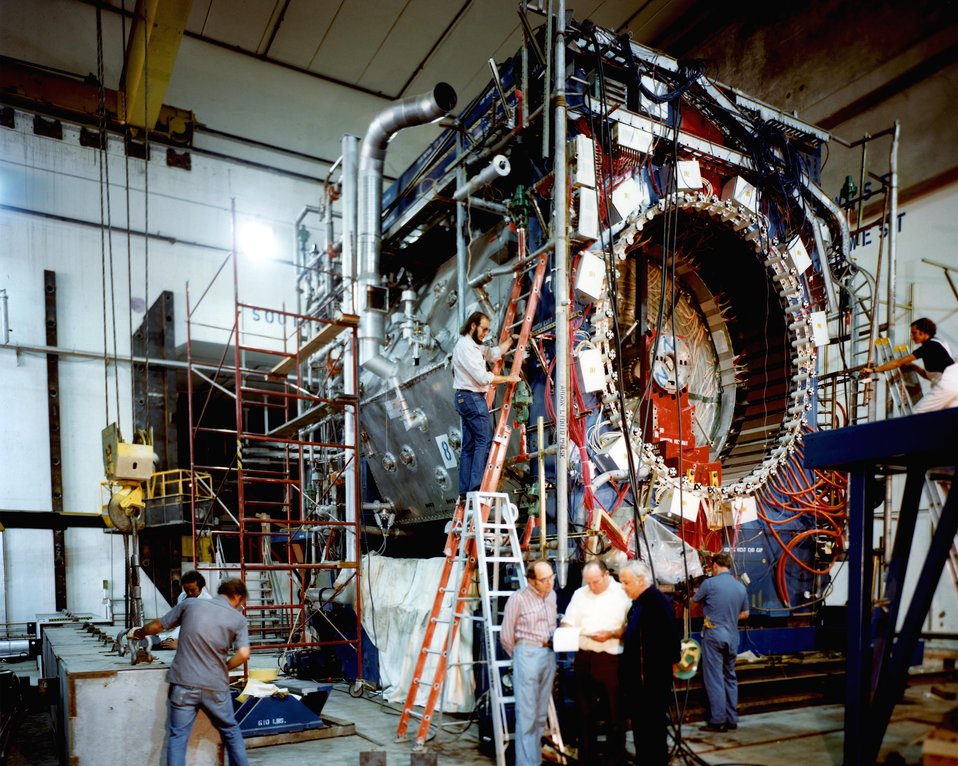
TECHNICIANS ARE RE-ASSEMBLING THE MARK II DETECTOR AT PEP.

THE POSITRON-ELECTRON PROJECT (PEP) IS A JOINT UNDERTAKING OF STANFORD LINEAR ACCELERATOR CENTER (SLAC) AND THE LAWRENCE BERKELEY LABORATORY (LBL). THE PEP MACHINE IS DESIGNED TO STORE BEAMS OF ELECTRONS AND POSITRONS CIRCULATING IN OPPOSITE DIRECTIONS AT SINGLE-BEAM ENERGIES BETWEEN 4 GEV AND 18 GEV. THE SOURCE OF THE BEAMS WILL BE THE PRESENT SLAC ACCELERATOR. THE COUNTER-ROTATING BEAMS OF ELECTRONS AND POSITRONS WILL COLLIDE WITH EACH OTHER AT SIX POINTS IN THE MACHINE. THESE COLLISION OR BEAM-INTERACTION POINTS WILL BE USED FOR HIGH-ENERGY PHYSICS EXPERIMENTS.